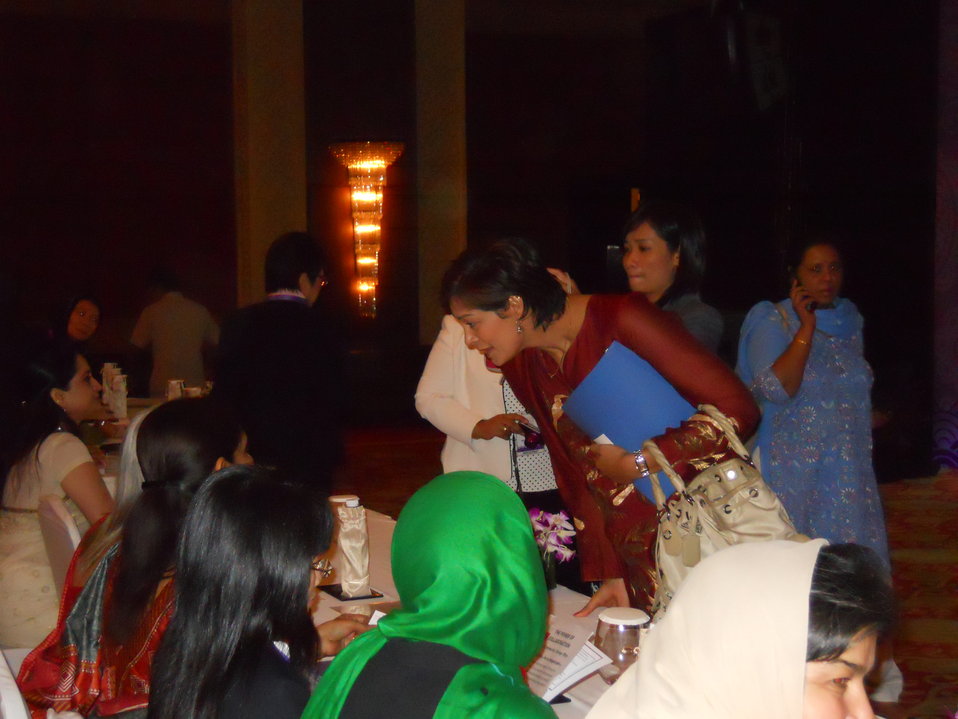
Summit Participants Chat With CNN International's Zain Verjee at the Opening of the Vital Voices Women's Empowerment Summit

Summit participants chat with the moderator of the event, CNN International's Zain Verjee, at the opening of the Vital Voices Women's Empowerment Summit in New Delhi, India, on September 15, 2010.